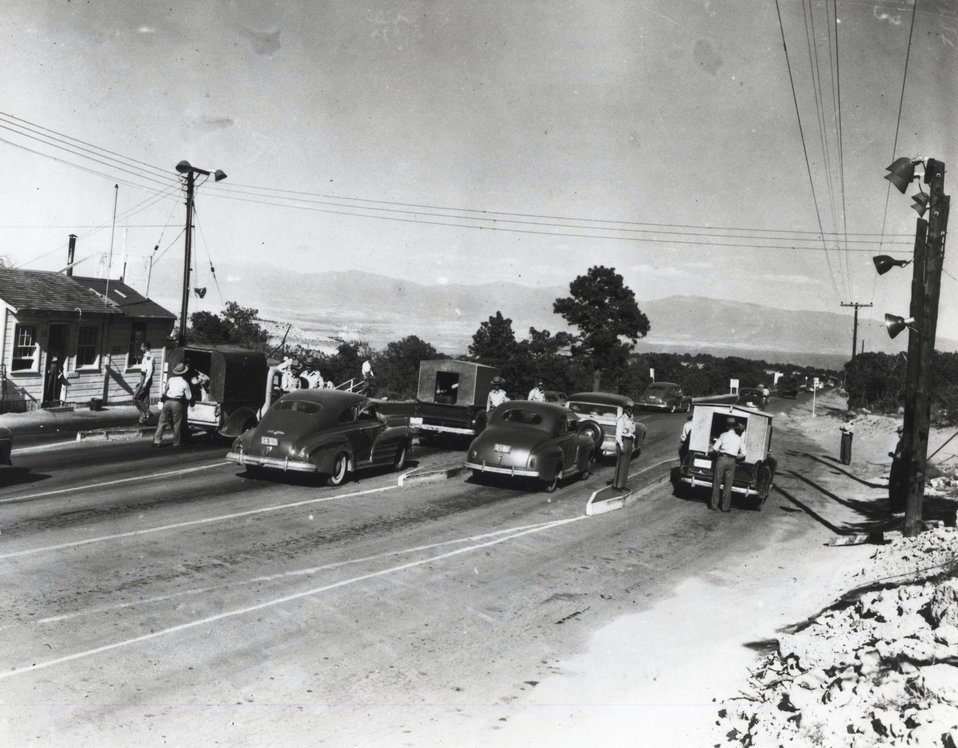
MAIN GUARD GATE